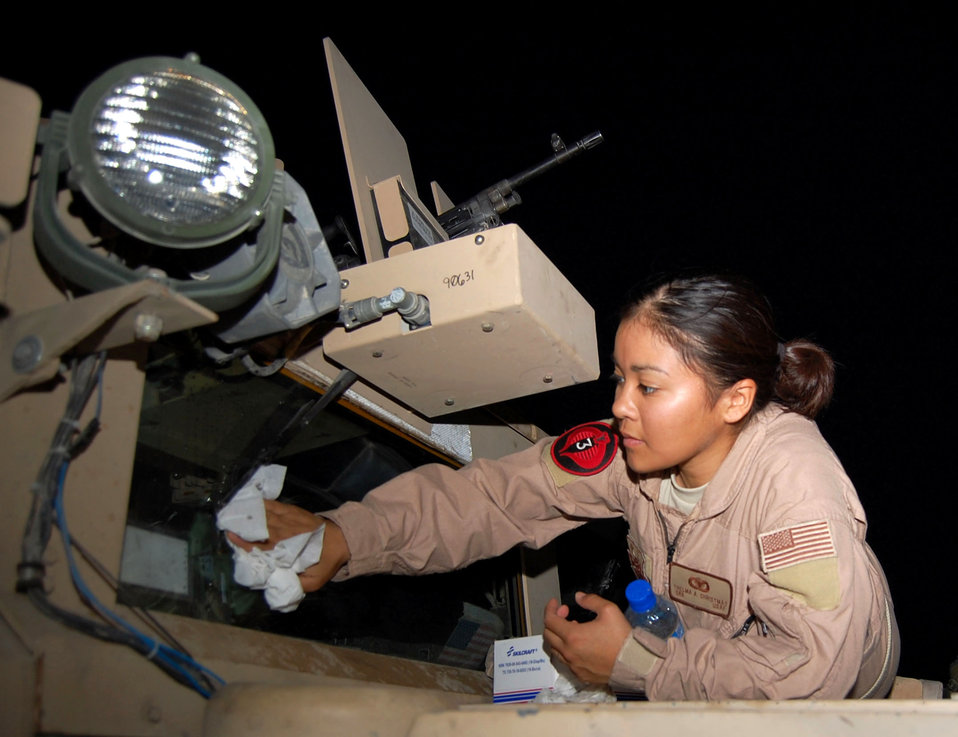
Convoy preparations

Senior Airman Thelma Christmas cleans the ballistic windshield of a Humvee prior to taking it on the road for a convoy operation Nov. 12 at Camp Bucca, Iraq. Airman Christmas, an 887th Expeditionary Security Forces Cobra Squad driver, is from Moody Air Force Base, Ga.